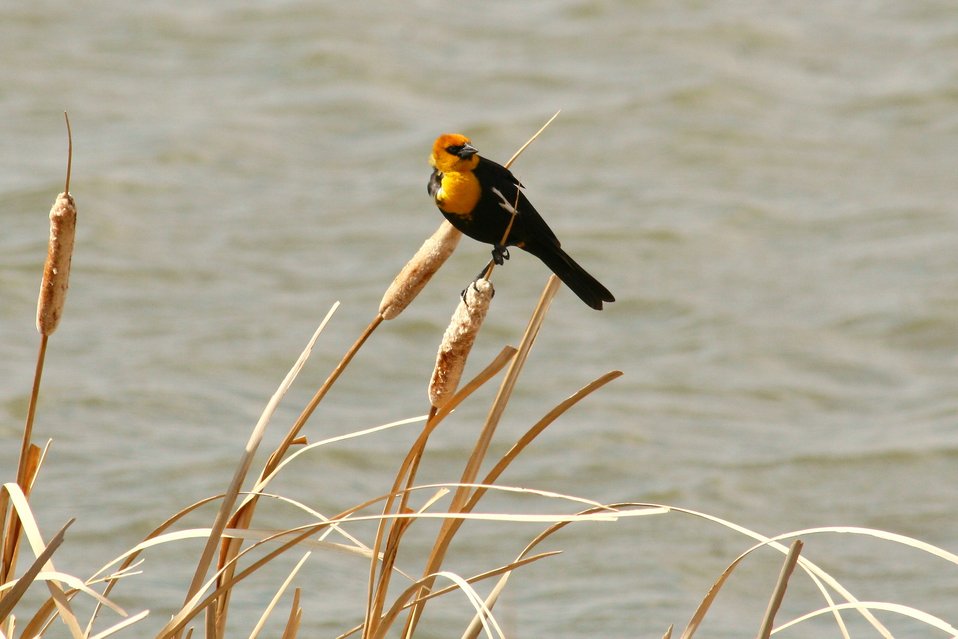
Yellow-headed Blackbird Perched on a Cattail

The lands of the refuge were established to protect and provide habitat for migratory birds that cross State lines and international borders and are by law a Federal trust responsibility.

The refuge is of great value to waterfowl and shorebirds, as well as other migrating water-dependent bird species, because of the diversity of wetland and upland habitats that provide for the diverse life cycle needs of these species.